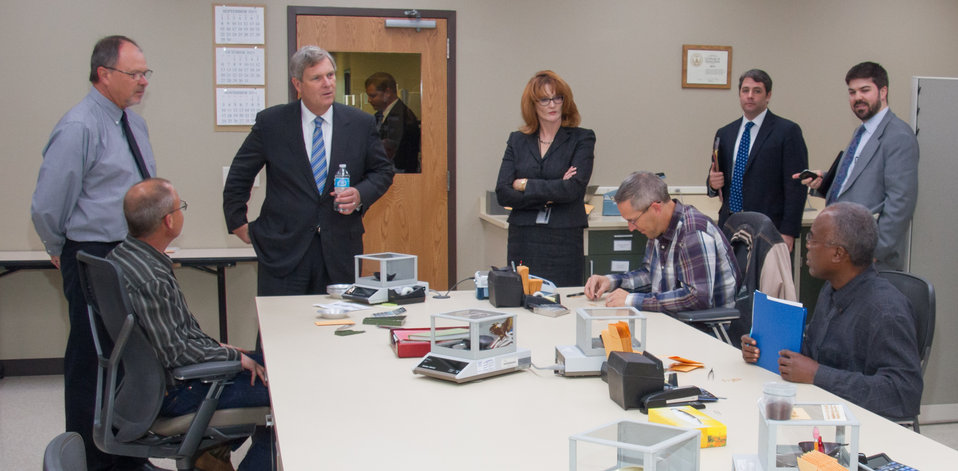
Left to right, Mark Ruth, James Whalen, Agriculture Secretary Tom Vilsak, Mary Alonzo, and Rick Millerd listen as Demsey Lewis, senior member of Grain Inspection, Packers and Stockyards Administration (GIPSA), Board of Appeals and Review, explains the importance of Visual Reference Images as standards used by grain inspectors in sensory analyses in Kansas City, MO, on Wednesday, Oct. 23, 2013.